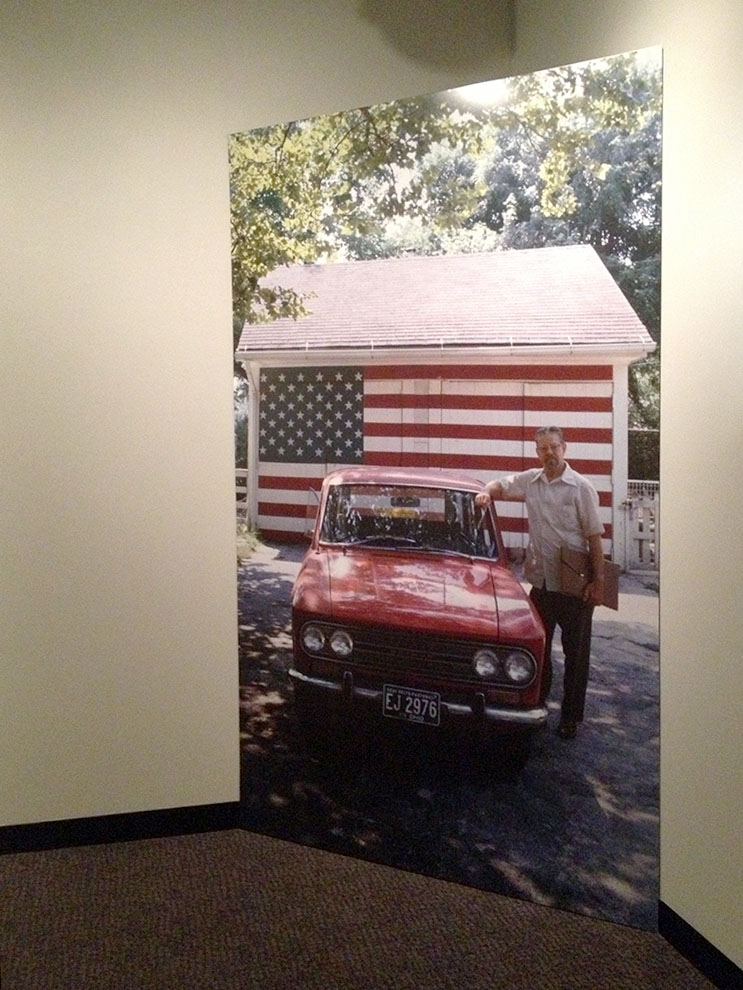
Documerica Exhibit Mural

'Searching for the Seventies' photo mural installed in the O'Brien Gallery.